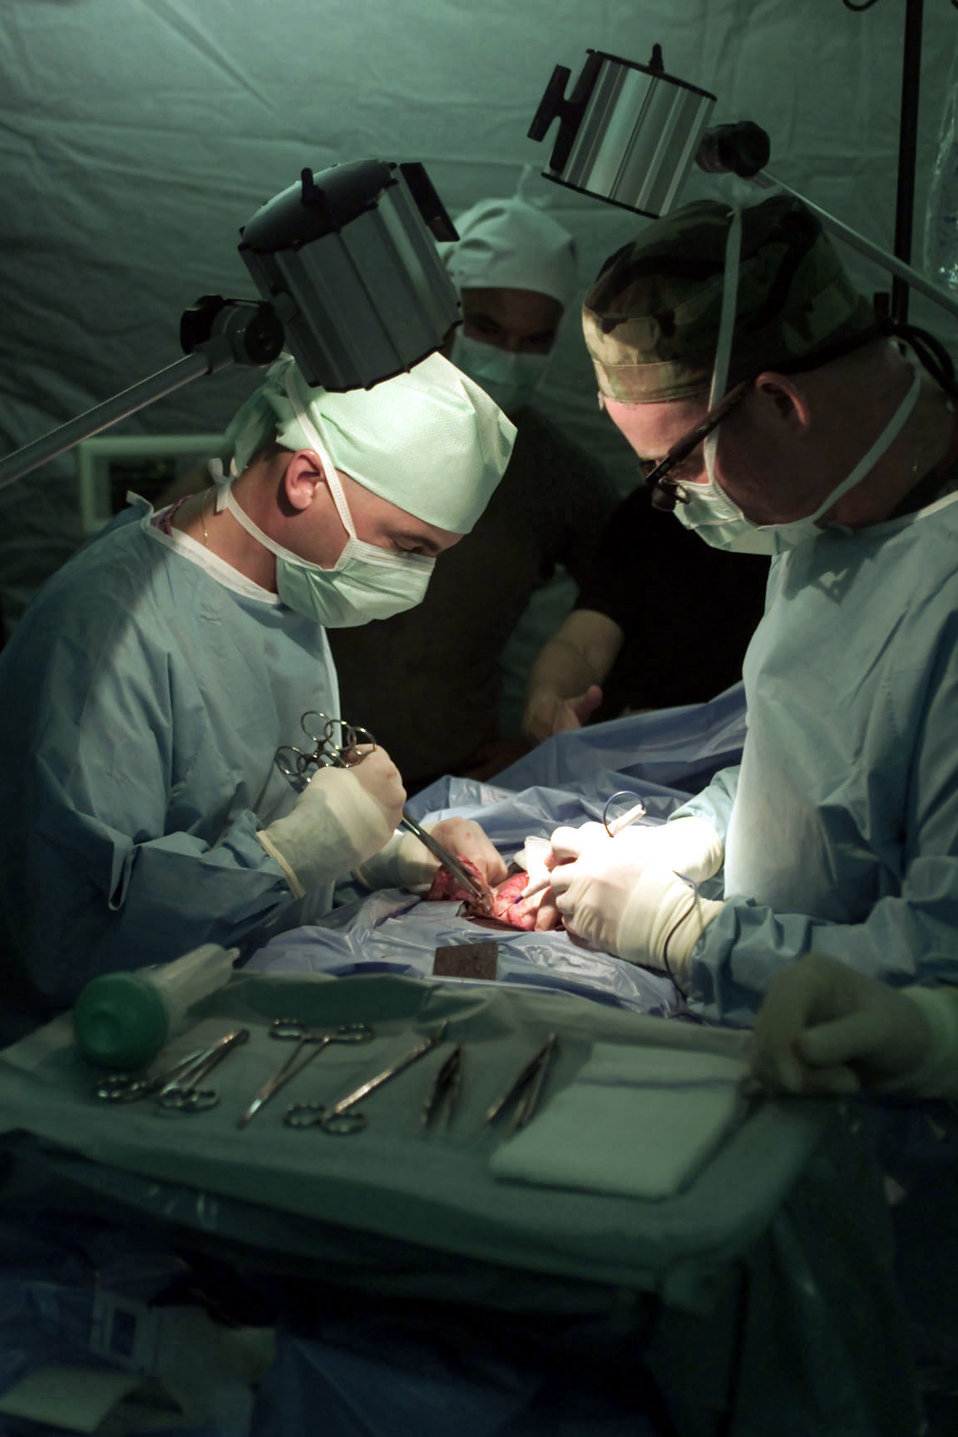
Keloid excision

OPERATION ENDURING FREEDOM -– Navy Lt. Cmdr. David Cline (left) from the Navy Support Facility Medical in the Indian Ocean, and Maj. Jerry Cohn from the 81st Medical Surgical Squadron at Keesler Air Force Base, Miss, perform a Keloid excision while deployed in support of Operation Enduring Freedom. A Keloid excision removes an excessive growth of scar tissue from the skin.